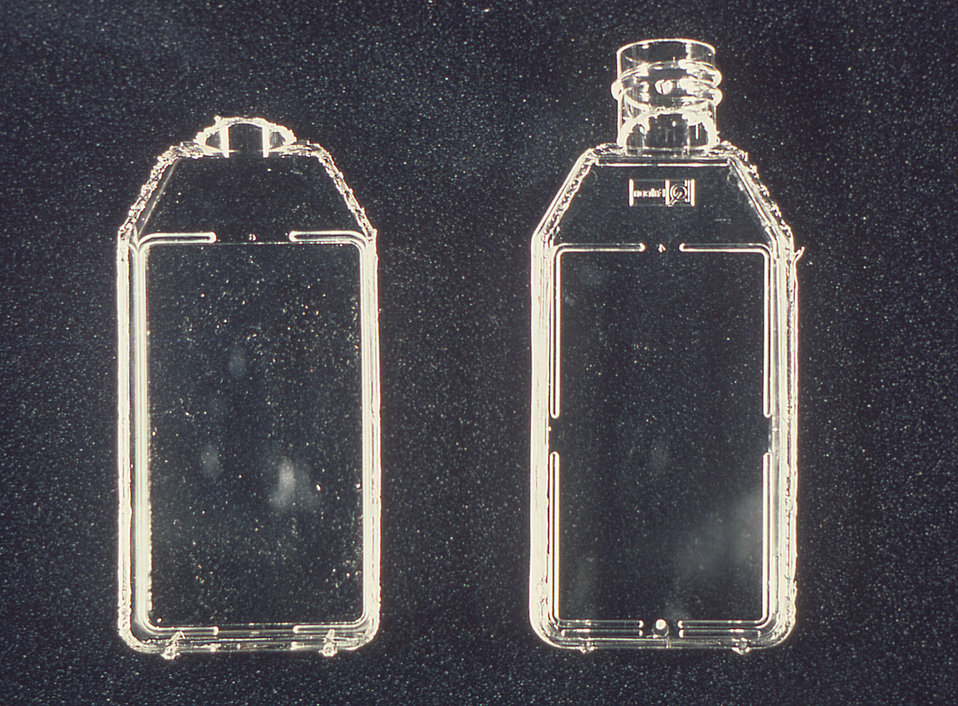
The 25 sq. cm. Falcon� Flask on the left had its top removed using a 'hot' wire during an amniotic fluid test.